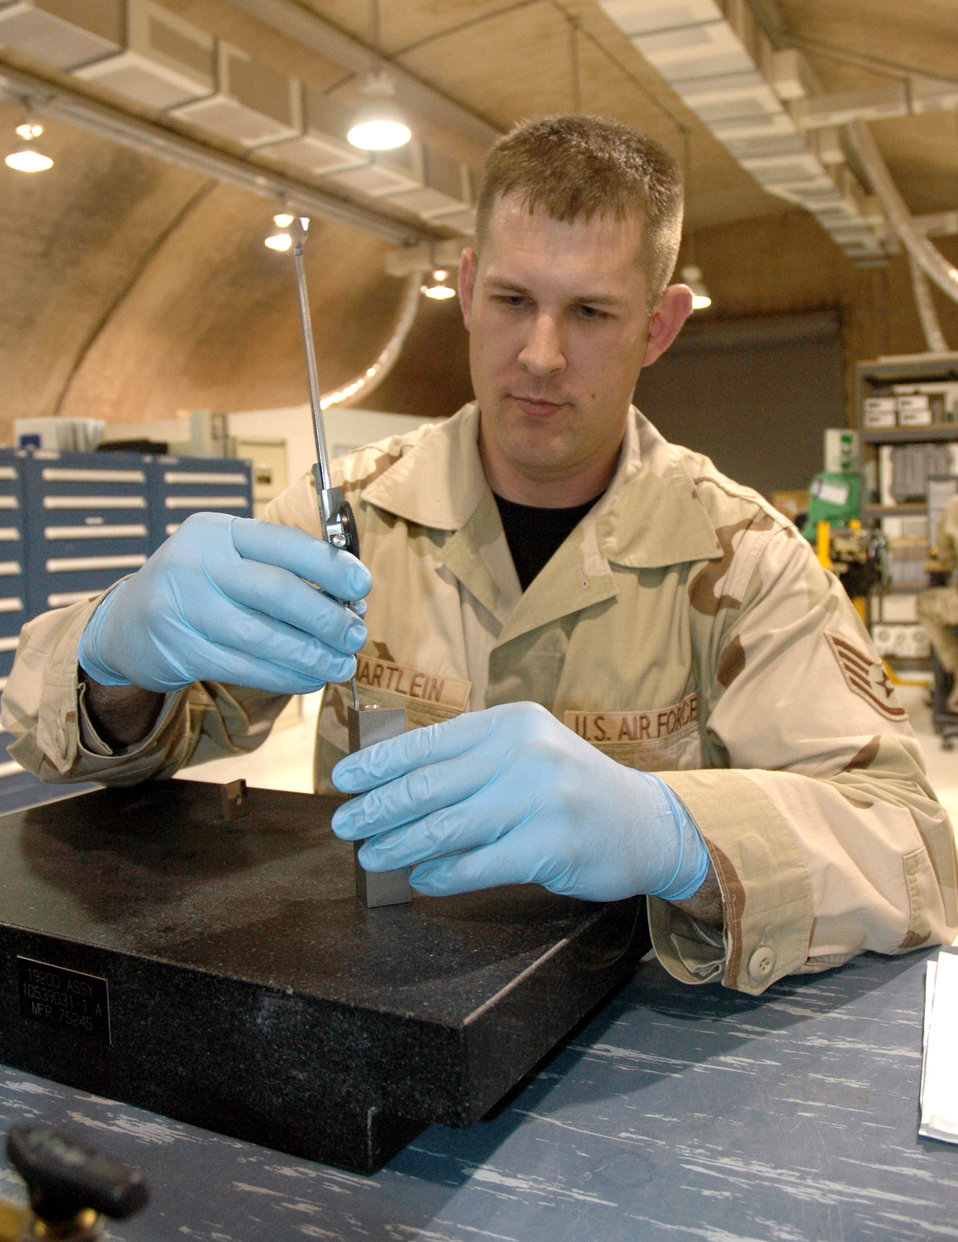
Expeditionary wing supports war efforts in many ways

Staff Sgt. Jeffrey Hartlein, 379th Expeditionary Maintenance Squadron Test, Measurement, and Diagnostic Equipment Flight TMDE craftsman, calibrates a dial caliper used to make length or width measurements on a multitude of different parts.